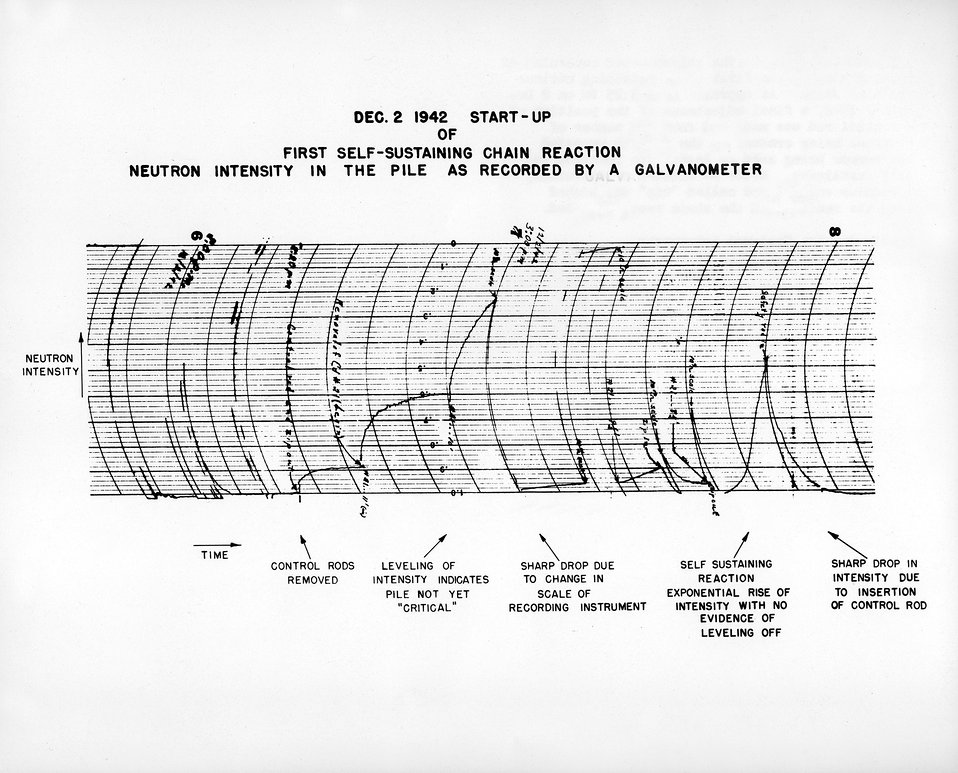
The 'birth certificate' of the Atomic Age . The galvanometer chart indicated the rise in neutron intensity associated with the first controlled chain reaction.